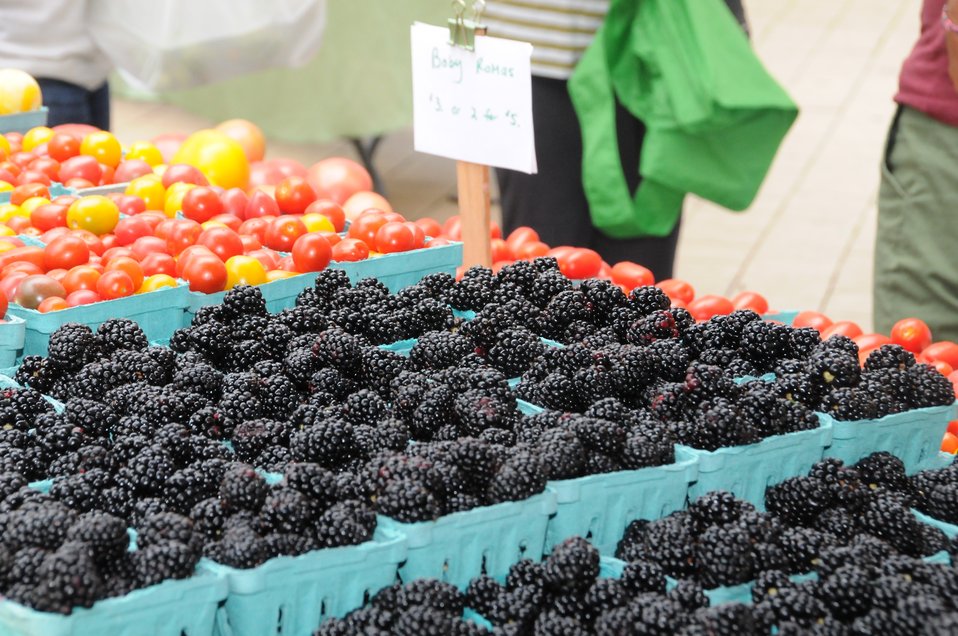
Berries

Juicy berries sold at the Columbia Heights Community Marketplace.